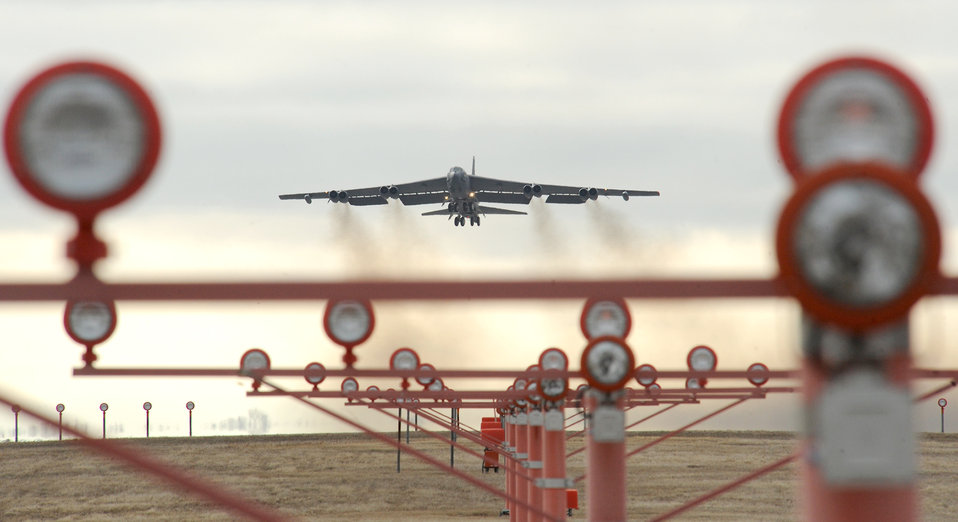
Taking to the sky

A B-52 Stratofortress takes off April 13, 2011, during an exercise at Minot Air Force Base, N.D.